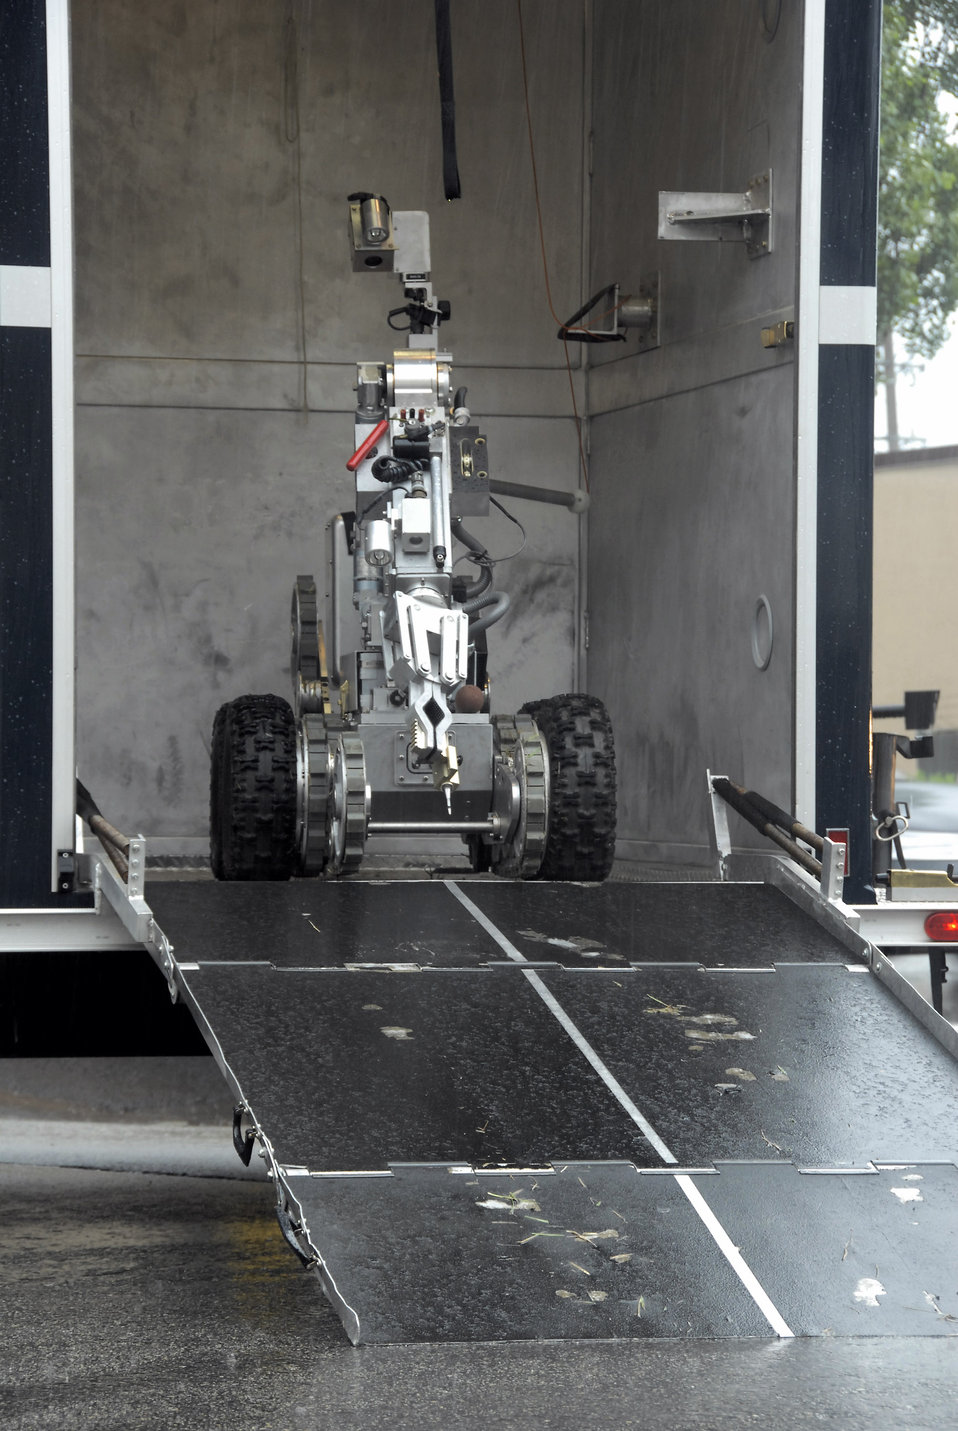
Handle with care

Explosive ordnance disposal Airmen use an F6A robot to handle suspicious packages. During a base-wide exercise July 24 at Osan Air Base, South Korea, EOD specialists with the 51st Civil Engineer Squadron responded to a